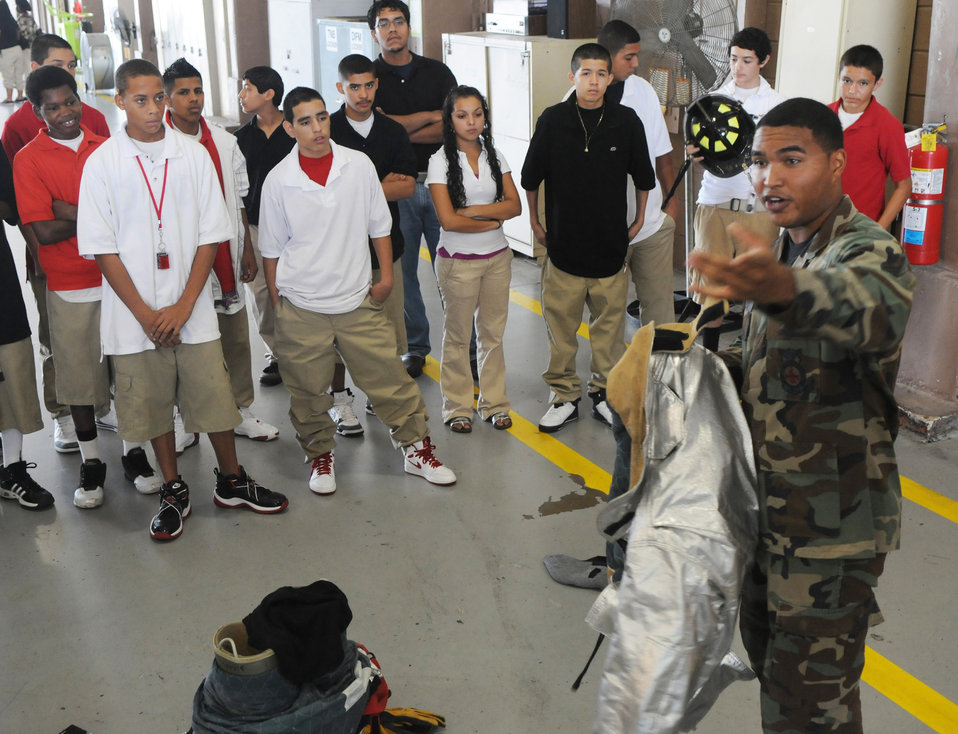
Randolph Airmen expose at-risk students to today's Air Force

Senior Airman Trevor Alexis briefs members of Giving Americans Motivational Education for the Real World program from Fox Technical High School Sept. 11, 2009, to Randolph Air Force Base, Texas. The briefing was part of a tour of Randolph AFB, highlighting what an Air Force career may hold for the students. Airman Alexis is assigned to the 12th Civil Engineer Squadron fire department.